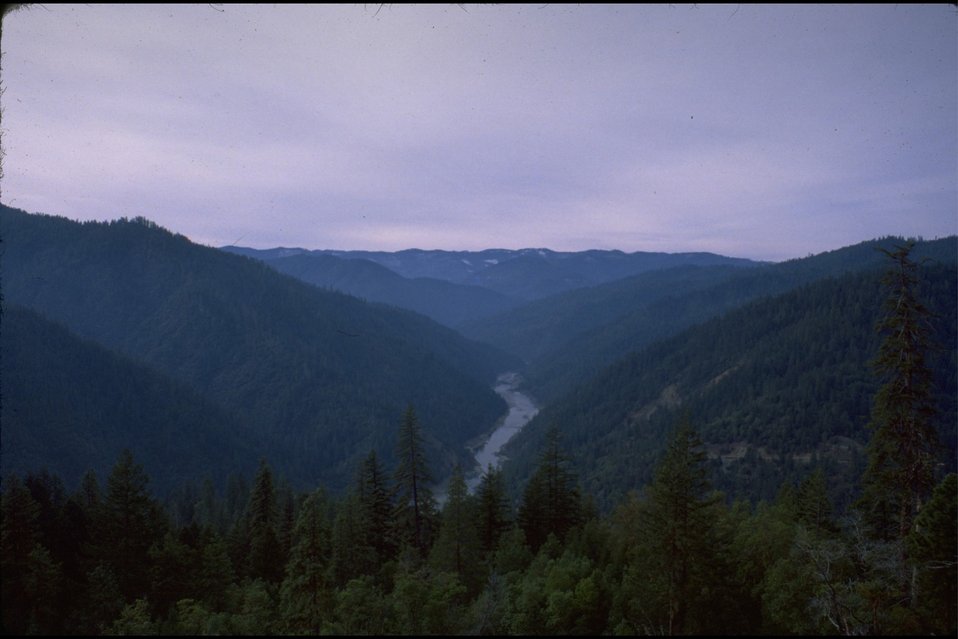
Rogue River - Scenic shot.